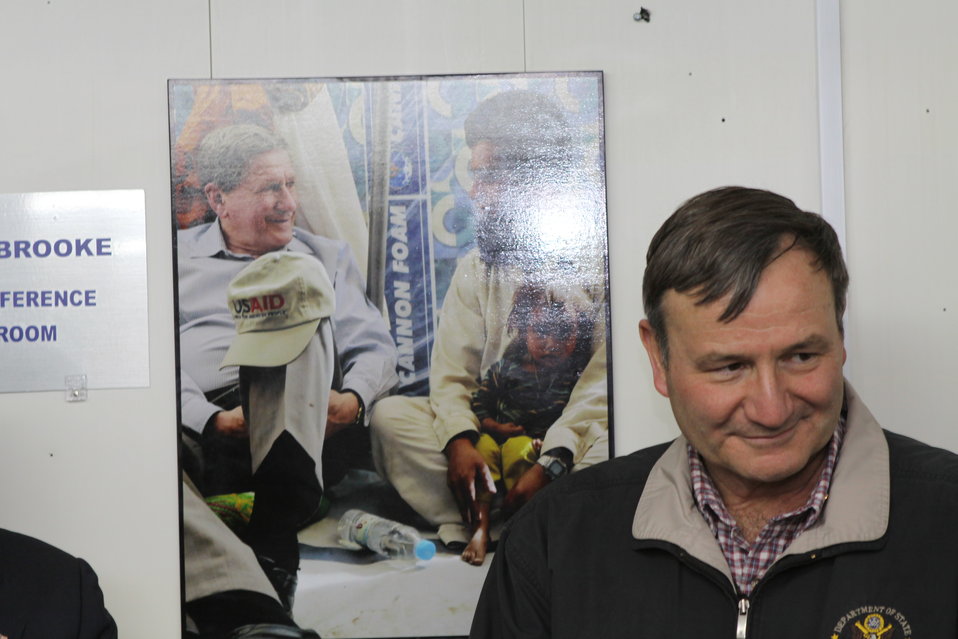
U.S. Ambassador Karl W. Eikenberry